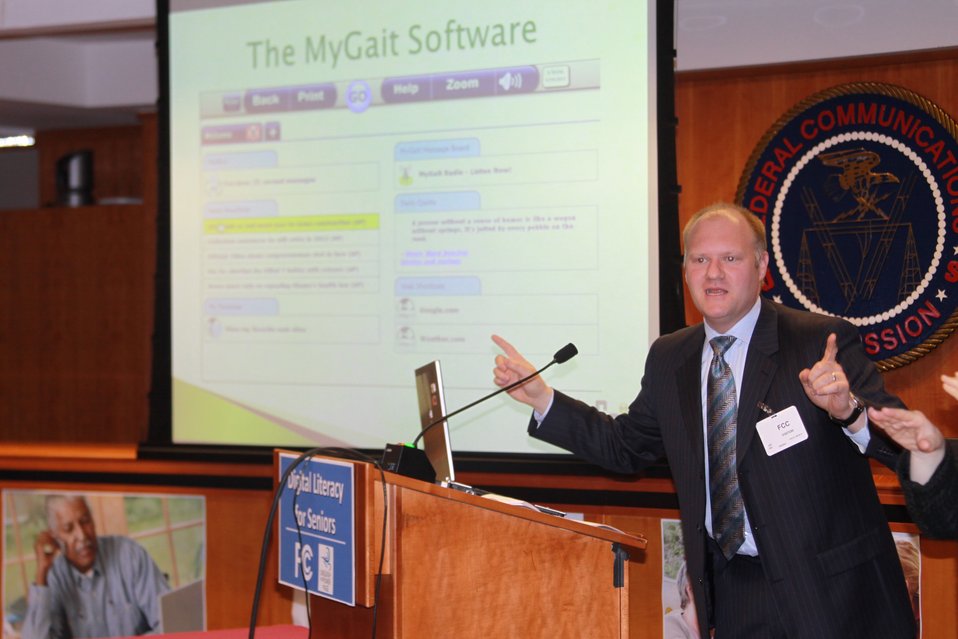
Jeff Hill, MyGait: Digital Literacy for Seniors: How the Internet Can Benefit Older Americans, April 24, 2013